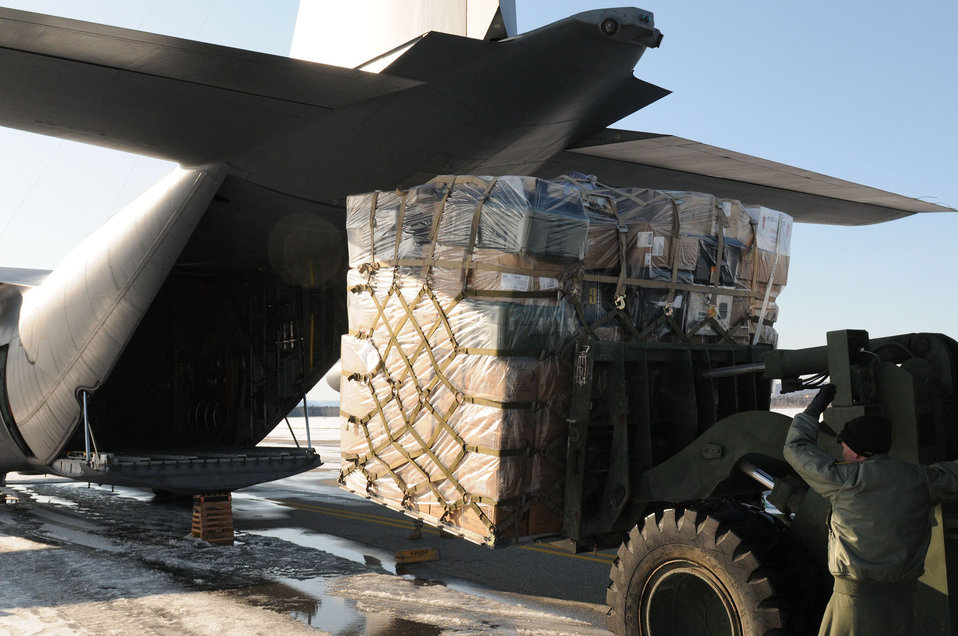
Arctic Care

An Alaska Air National Guard loadmaster from the 144th Airlift Squadron guides supplies onto a C-130 Hercules April 14, 2011, in support of Operation Arctic Care 2011. The supplies were destined for a forward logistics base in Galena, Alaska, and will assist medical professionals in providing medical, dental, optometric and veterinary care to Alaskans in remote villages.